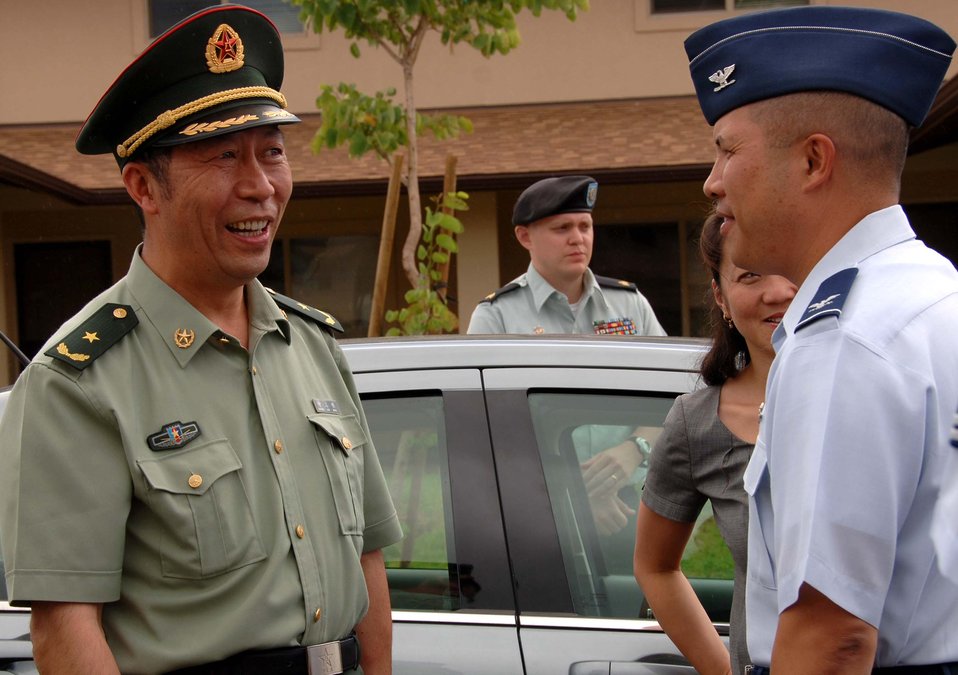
China military delegation visits Hickam AFB

Col. Giovanni Tuck greets the People's Liberation Army Maj. Gen. Zhong Zhiming, chief of military affairs for the PLA Headquarters General Staff, during a Chinese miltary enlisted delgation visit here Oct. 1-2. The visit is part of a continuum of reciprocal exchanges between the United States and China and contributing to the steady progress of our military-to-military relationship-building activities. Colonel Tuck is the 15th Airlift Wing commander.